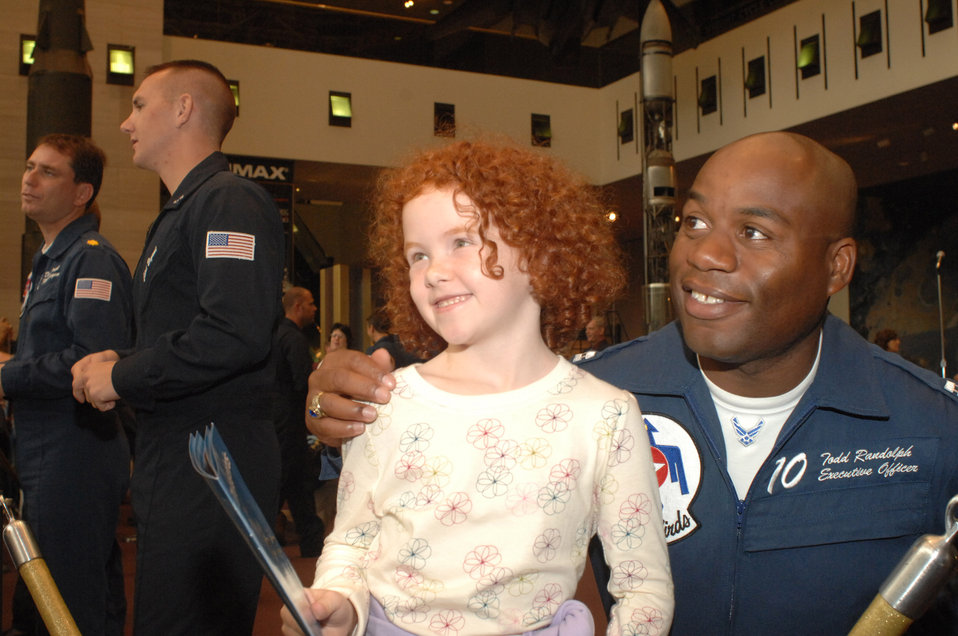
Thunderbirds visit Smithsonian Air and Space Museum

Megan Pursley from San Antonio poses with Capt. Todd Randolph at the Smithsonian Air and Space Museum Oct. 11 in Washington, D.C. Captain Randolph is the Thunderbirds executive officer, and was at the Smithsonian as part of a week-long series of events that will culminate with the opening of the Air Force Memorial Oct. 14.